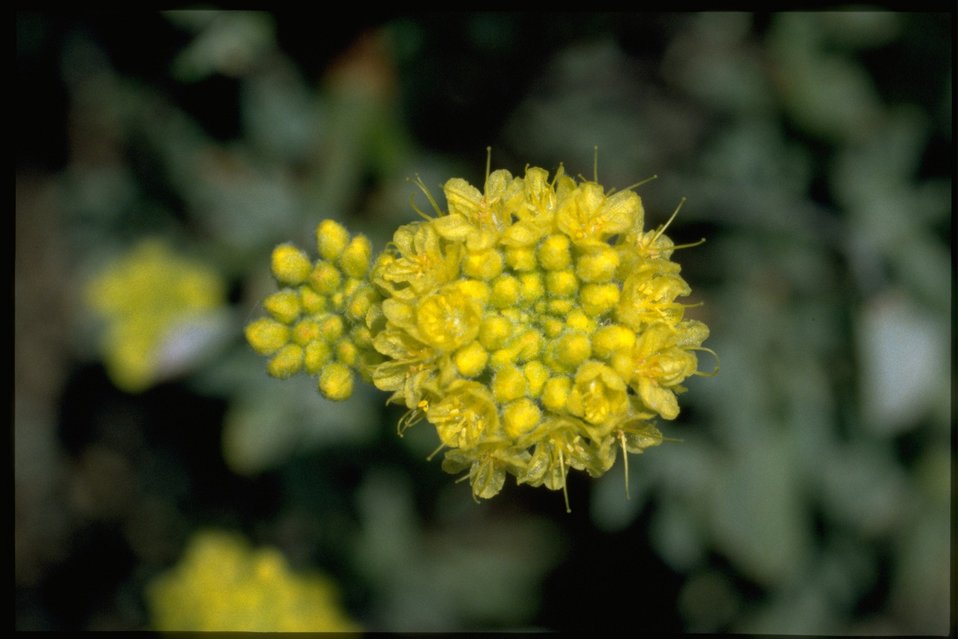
Closeup shot of Erigonum.